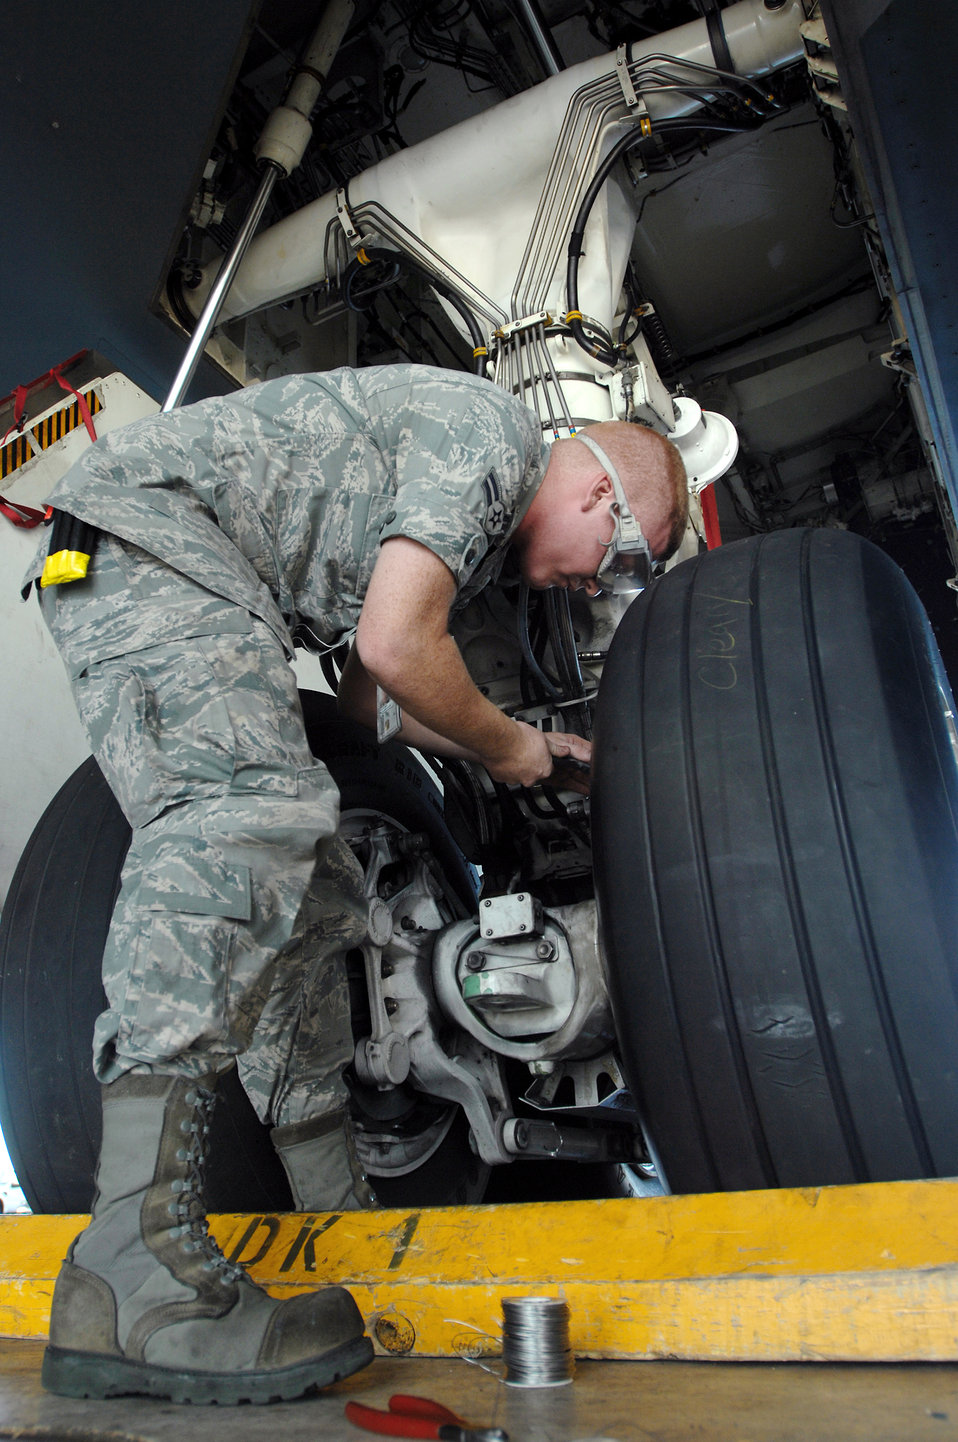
Ready for takeoff

Airman 1st Class Benjamin Feldkamp works on the brakes on a B-2 Spirit before takeoff Aug. 22 at Whiteman Air Force Base, Mo. Airman Feldkamp and other 509th Aircraft Maintenance Squadron crew chiefs work around the clock to ensure the B-2 is mission ready at all times.